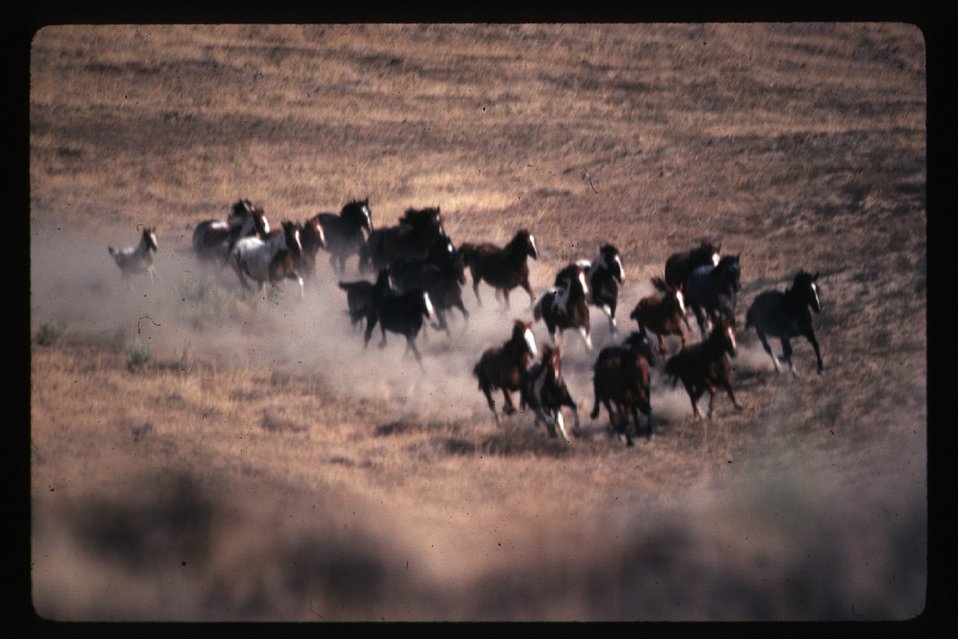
Wild horse roundup Wild Horse and Burro Adoption Program LSRD Lower Snake River District